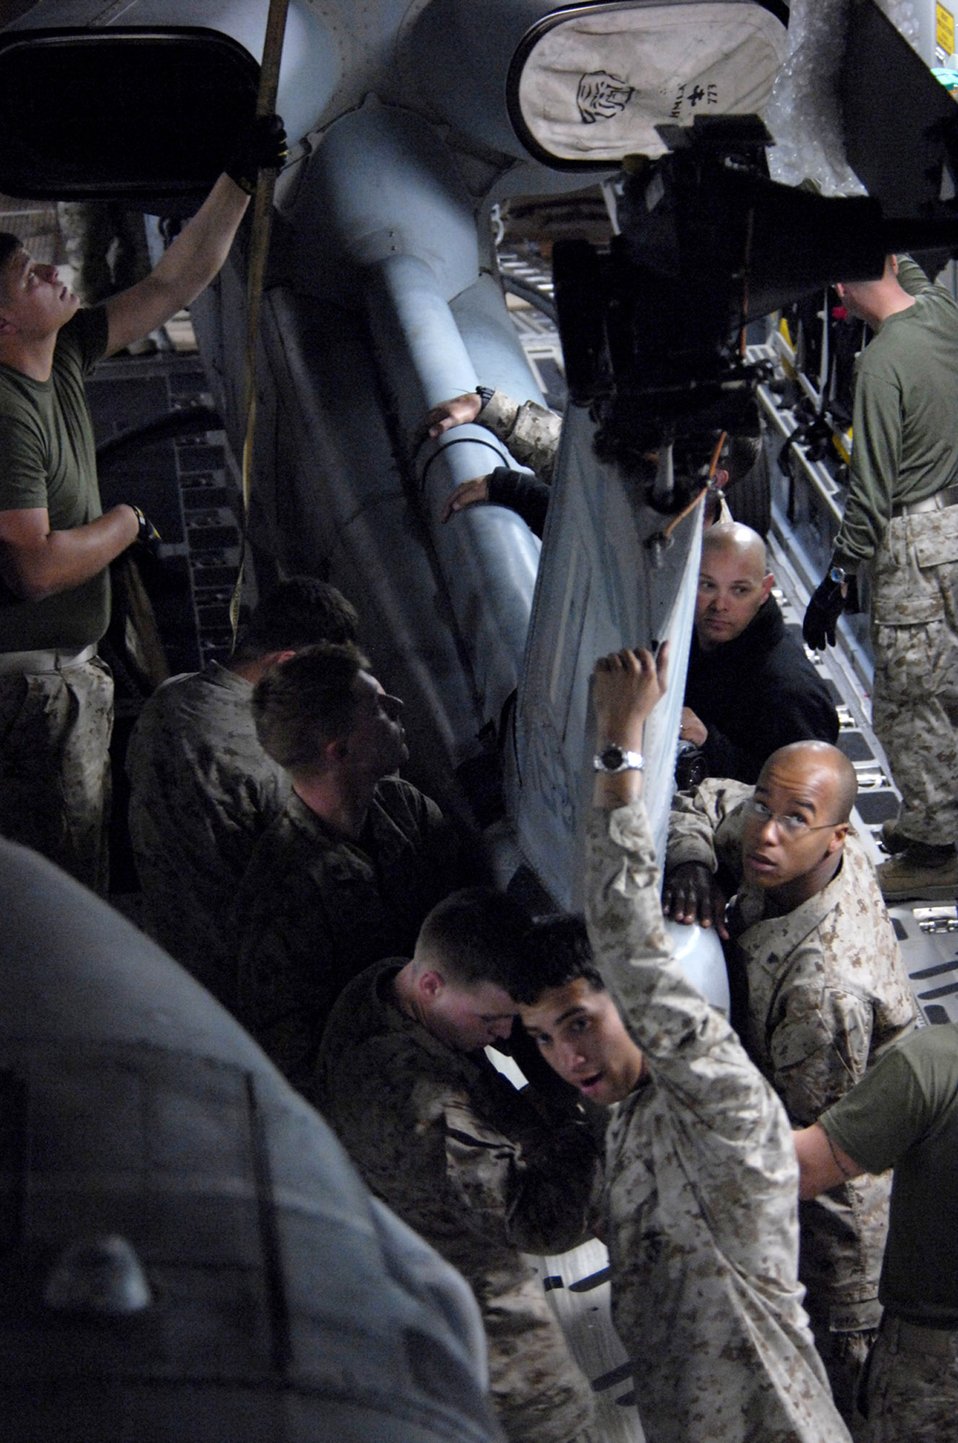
Marines move through Manas Air Base

Marines with the 24th Marine Expeditionary Unit load three AH-1W Super Cobra helicopters onto an Air Force C-17 Globemaster III March 16 at Manas Air Base, Kyrgyzstan. The Marines are headed downrange to Afghanistan as part of the troop plus-up authorized by the president in January. The Marines will be a part of the NATO-International Security Assistance Force, conducting operations to extend the authority of the Government of the Islamic Republic of Afghanistan.